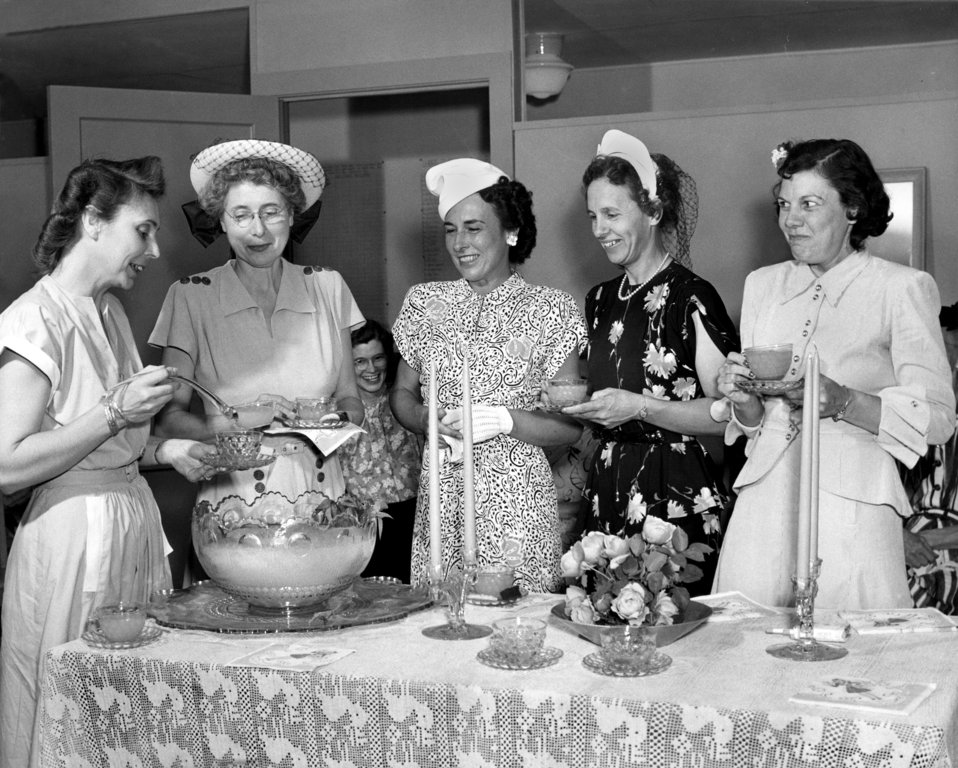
Girl Scouts Tea Oak Ridge

4519 DOE photo Ed Westcott

Girl Scouts Tea Oak Ridge Tennessee 5/29/48